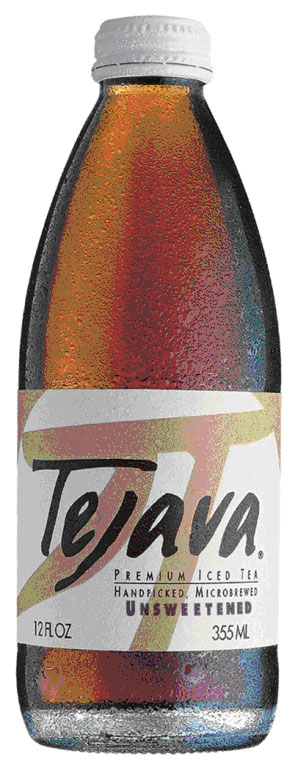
RECALLED - Iced Tea

December 9, 2011 - Product Recall - Voluntarily Recall of Limited Quantity of 12 oz Tejava® Premium Iced Tea.